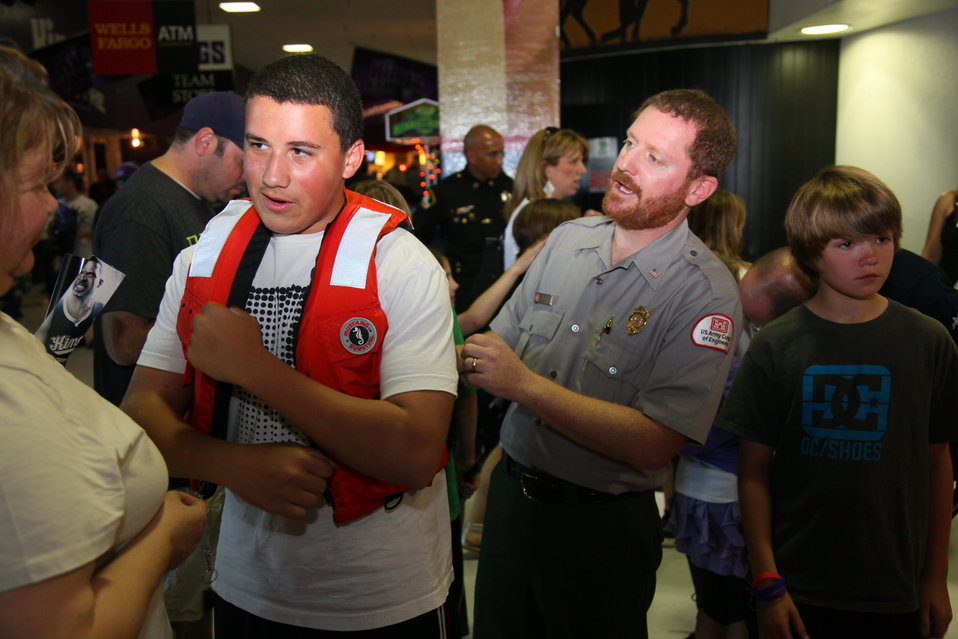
Water safety with the Kings

A young Sacramento Kings fan learns how to properly fit a life jacket with the assistance of U.S. Army Corps of Engineers Sacramento District park ranger Jonathan Friedman (right) at the Power Balance Pavilion in Sacramento, Calif., April 20, 2012. Friedman and other park rangers along with Bobber the Water Safety Dog were out spreading the word on how to stay safe on the water this summer.